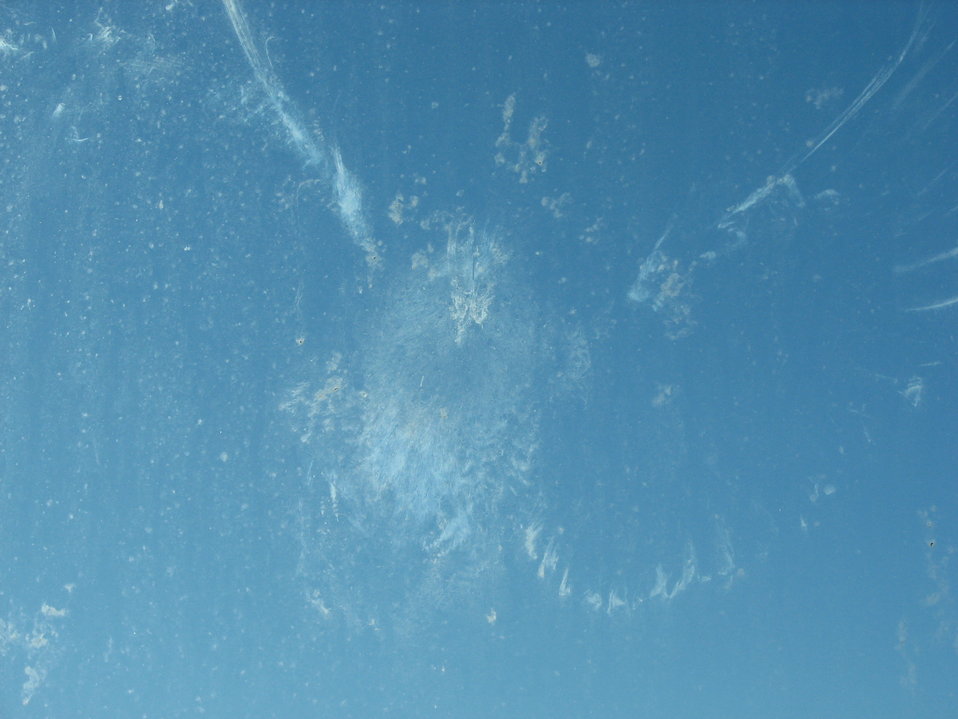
Bird Window strike

Imprint of a bird (probably a pigeon) in building window.

Credit: Pedro 'Pete' Ramirez, Jr. / USFWS